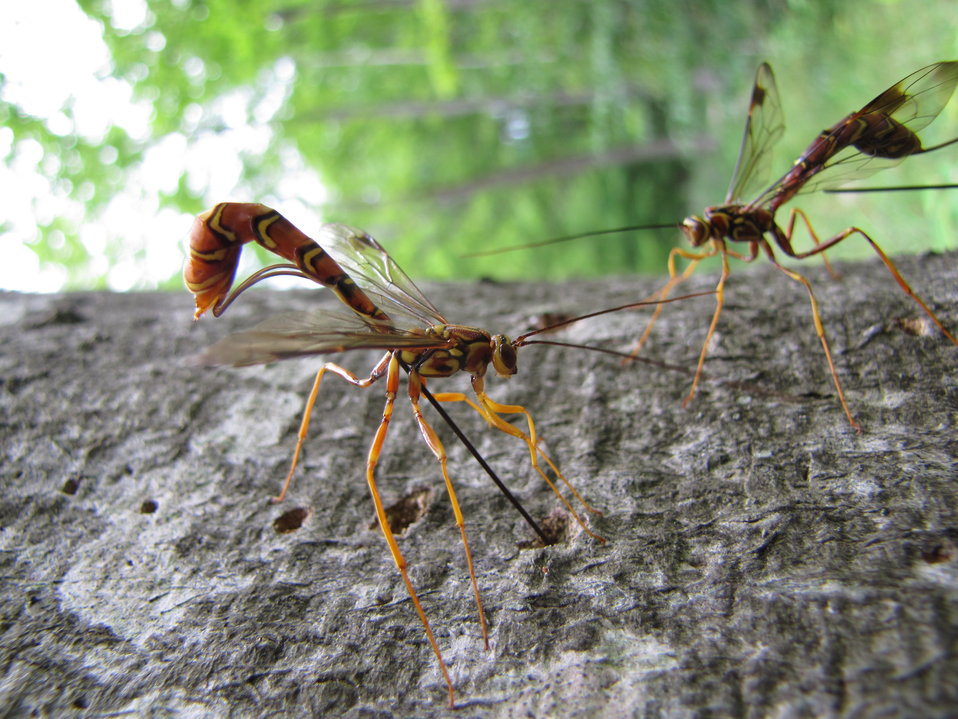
Ichneumon wasps at Seney National Wildlife Refuge.